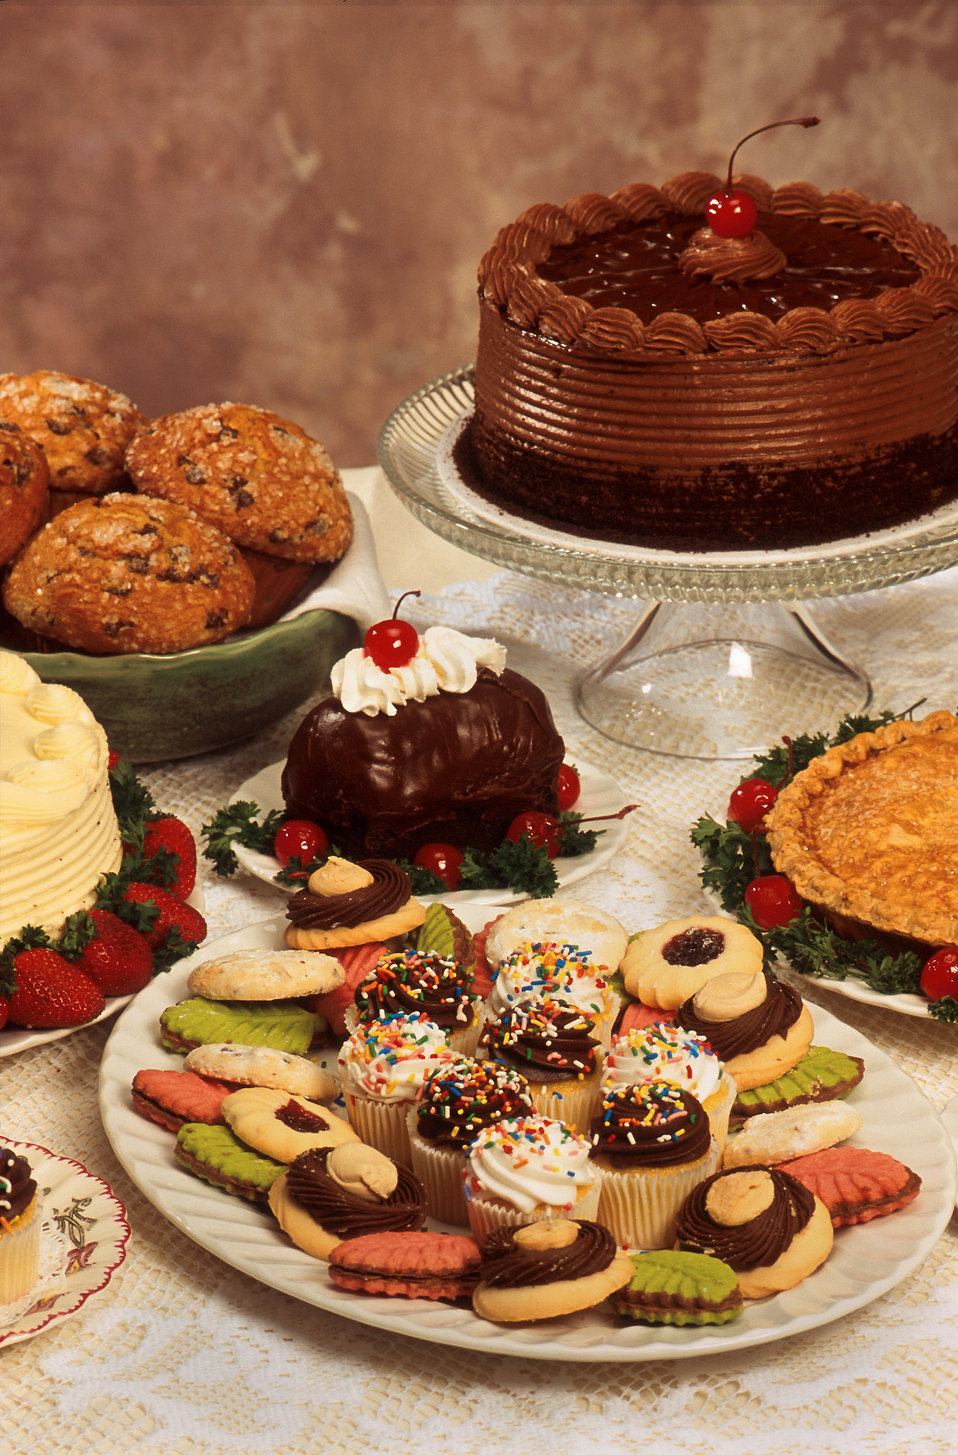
The consumption of cakes, cookies, pies, muffins, and other pastries has increased the amount of sugar intake of U.S. citizens.